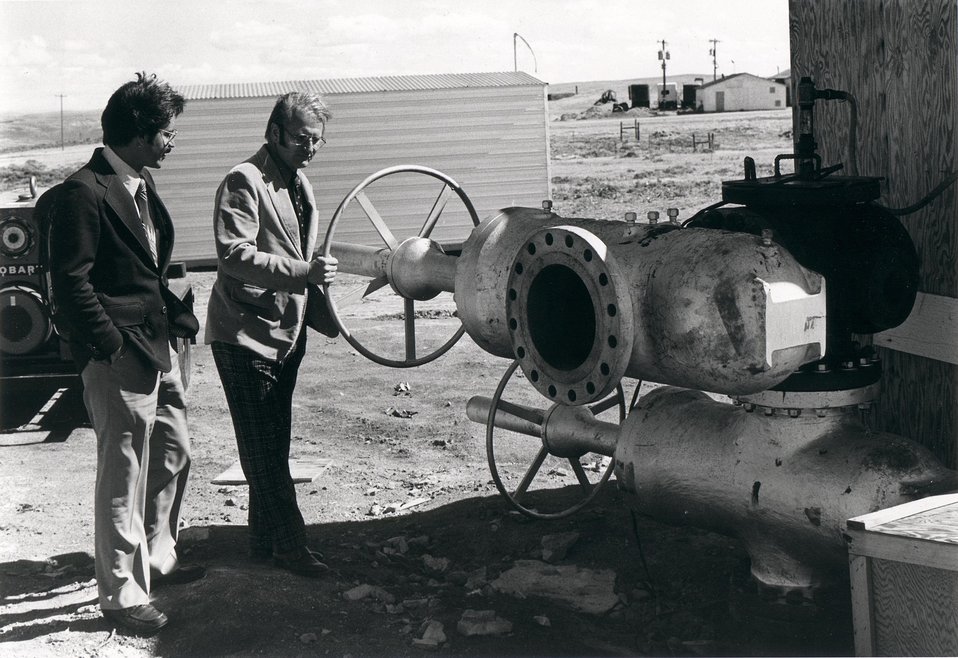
The Department of Energy's underground coal gasification program in Wyoming, called Hanna IV, is the largest test ever attempted in the Free World. c.1978